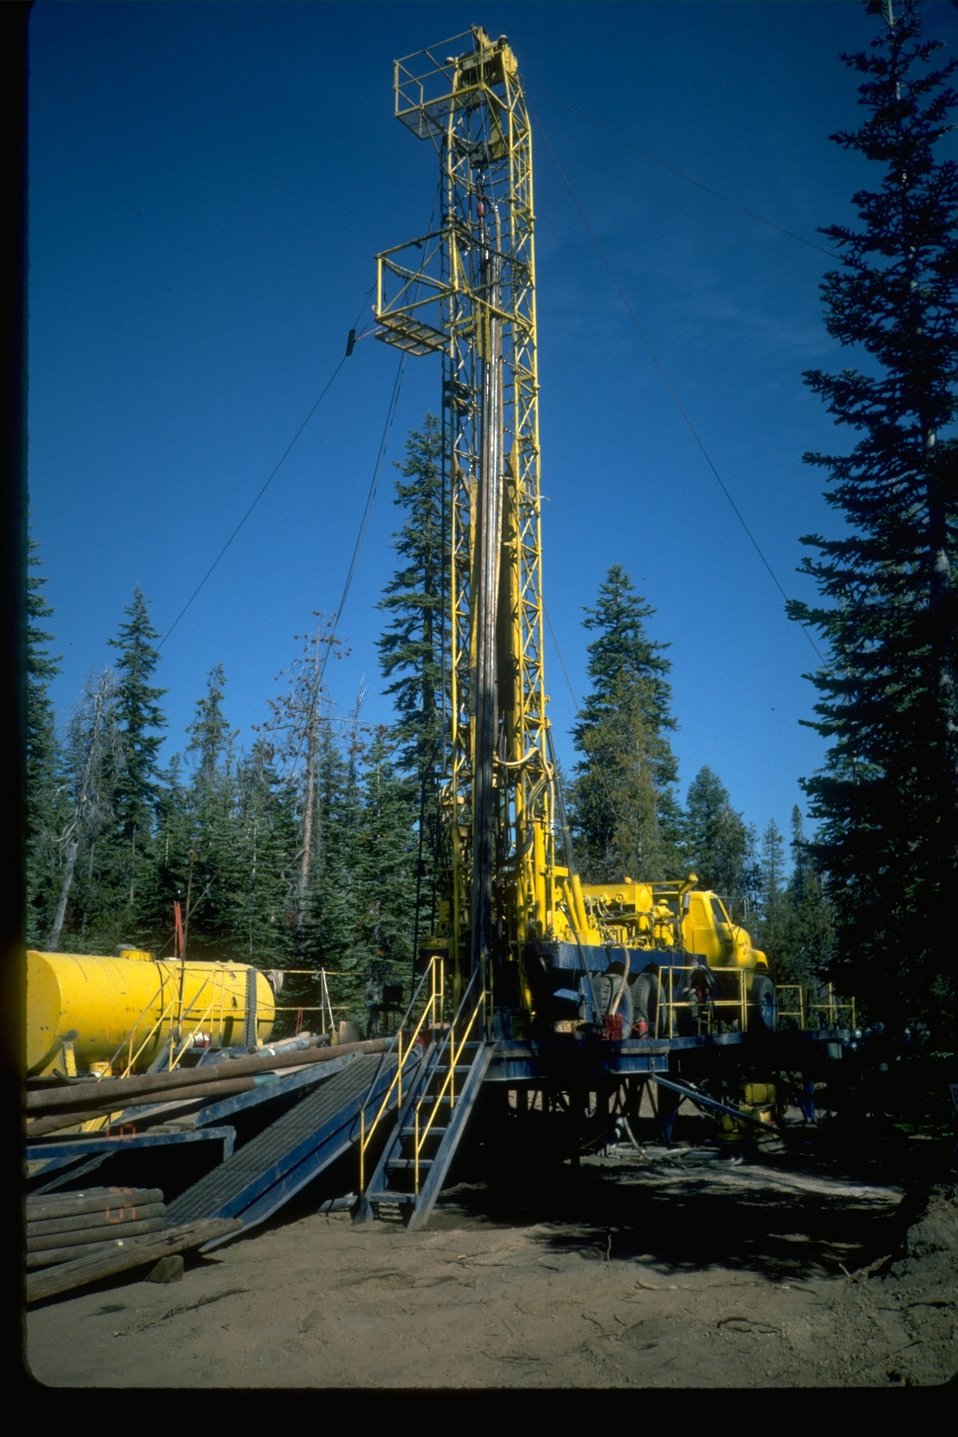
Large drilling rig in forested area.